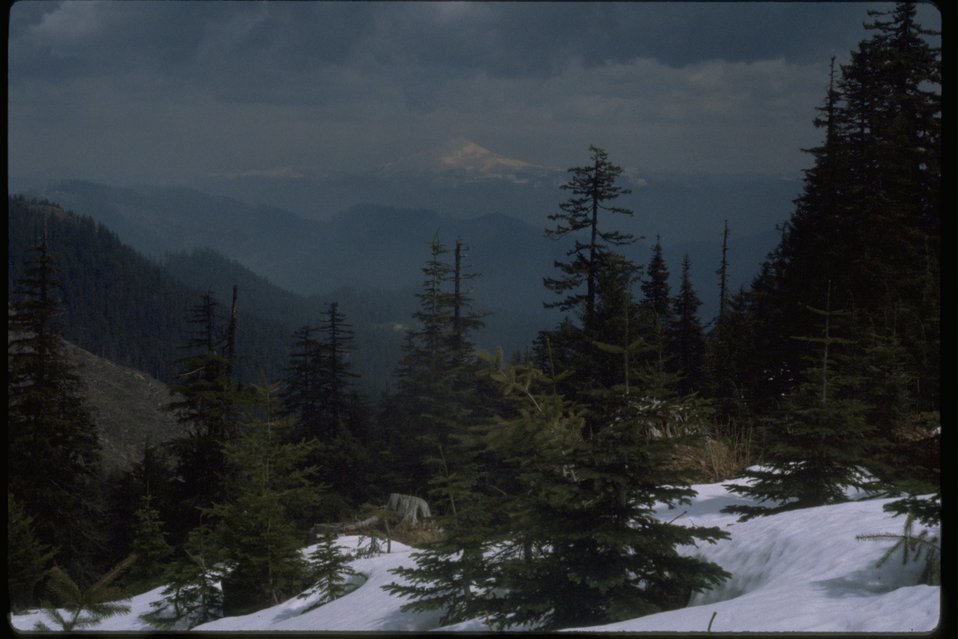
Scenic view of Mount Jefferson.